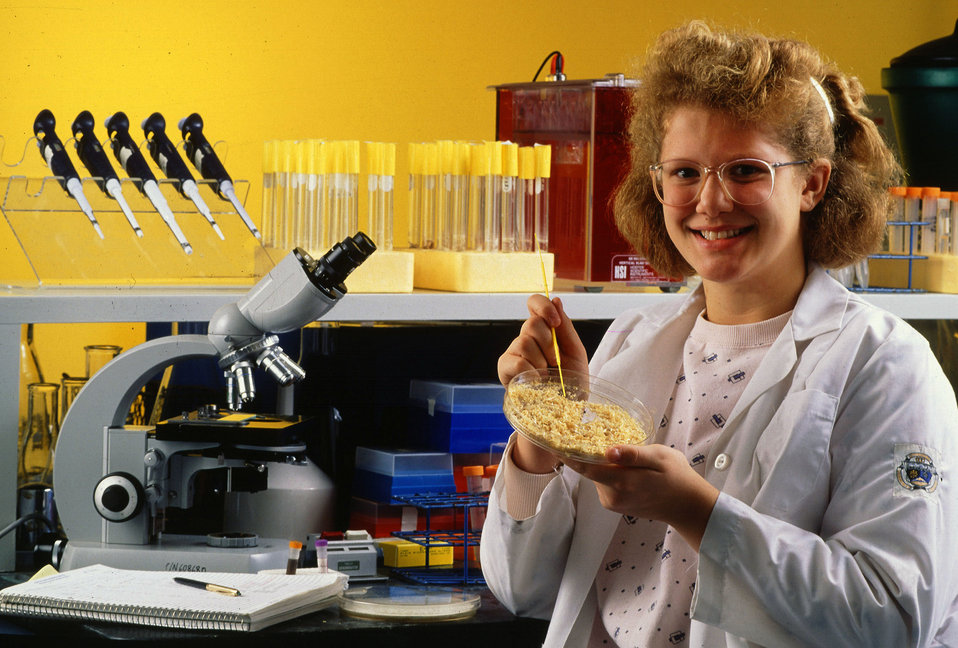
Middle school student Jenni Hermacinski helps with an experiment on biological control of insects at the U.S. Department of Agriculture’s (USDA) Agriculture Research Service (ARS) national Center for agricultural Utilization Research in Peoria, Il.